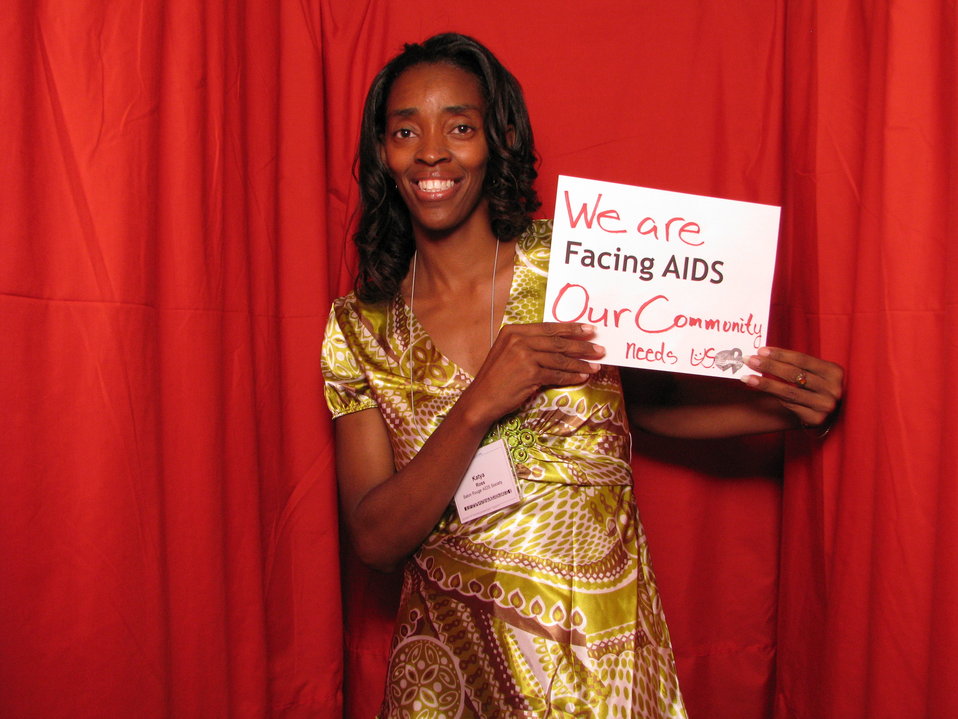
We are FACING AIDS Our Community needs us.

From the AIDS.gov photo booth at the U.S. Conference on AIDS, September 2010 (Orlando, FL).